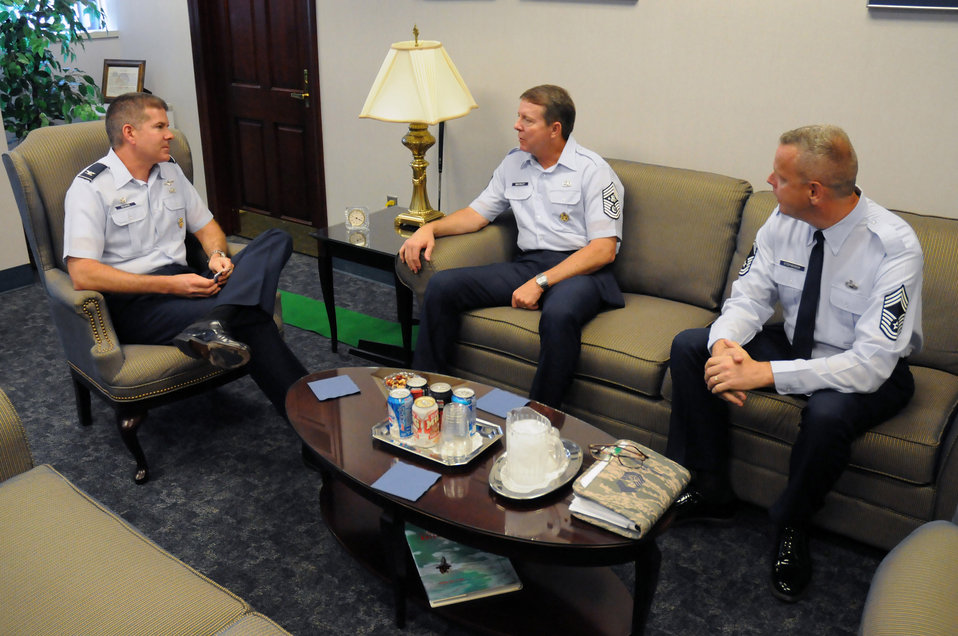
Straight from the chief

Col. D. Scott George (left) and Chief Master Sgt. Michael Stephenson brief Chief Master Sgt. of the Air Force Rodney J. McKinley during his visit Sept. 8 at Wright-Patterson Air Force Base, Ohio. During his visit, the chief visited with enlisted, officer and civilian employees and answered questions from Airmen. Colonel George is the National Air and Space Intelligence Center commander, and Chief Stephenson is the NASIC superintendent.